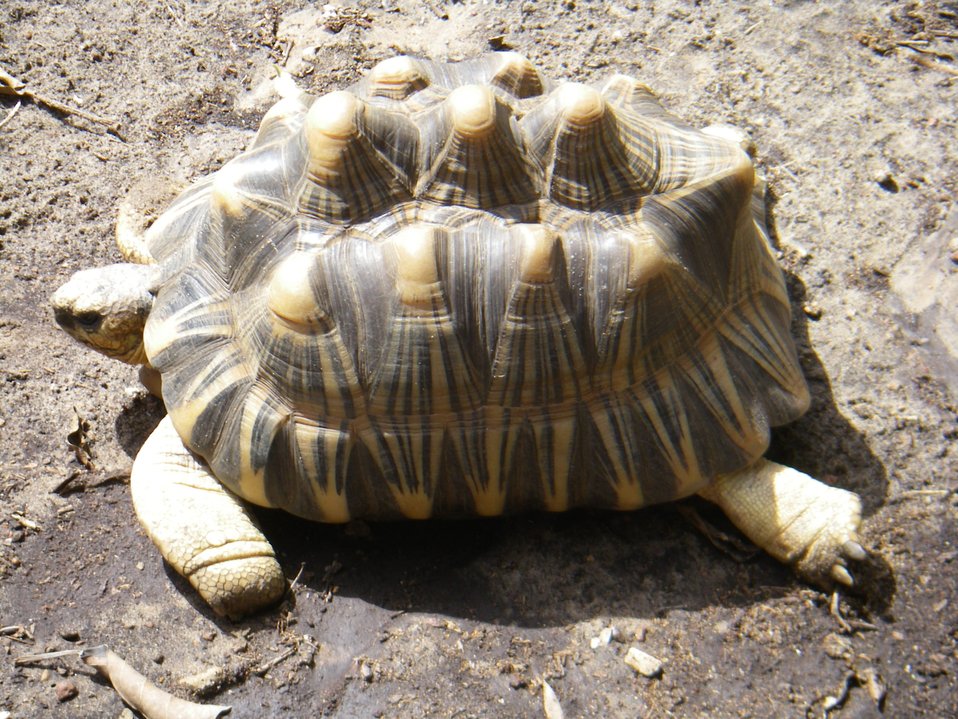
A sulcata tortoise (Geochelone sulcata) , a land-dwelling reptile native to Northern Africa.